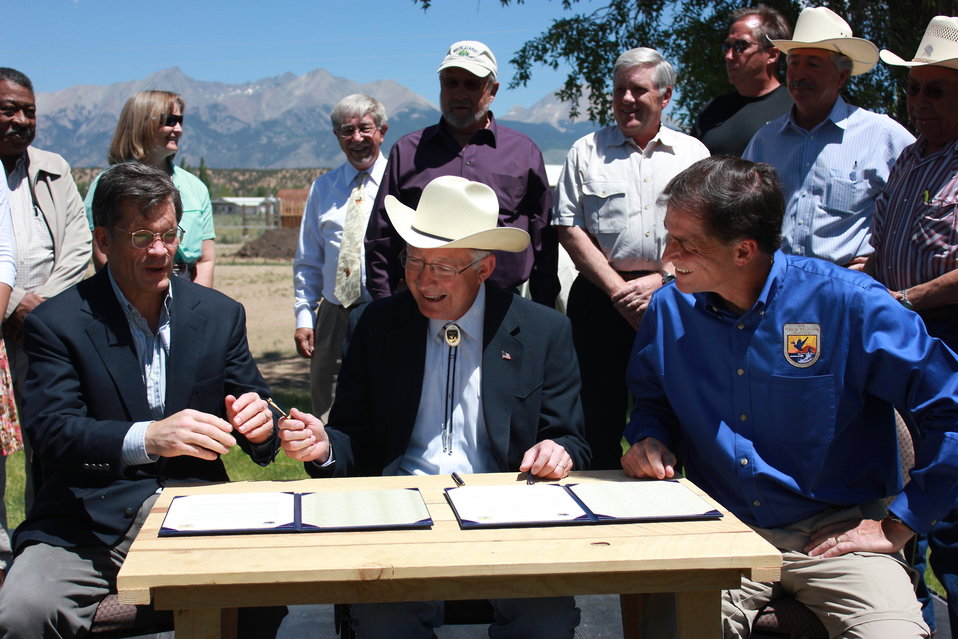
Historic Conservation Easement in Sangre de Cristo Mountains